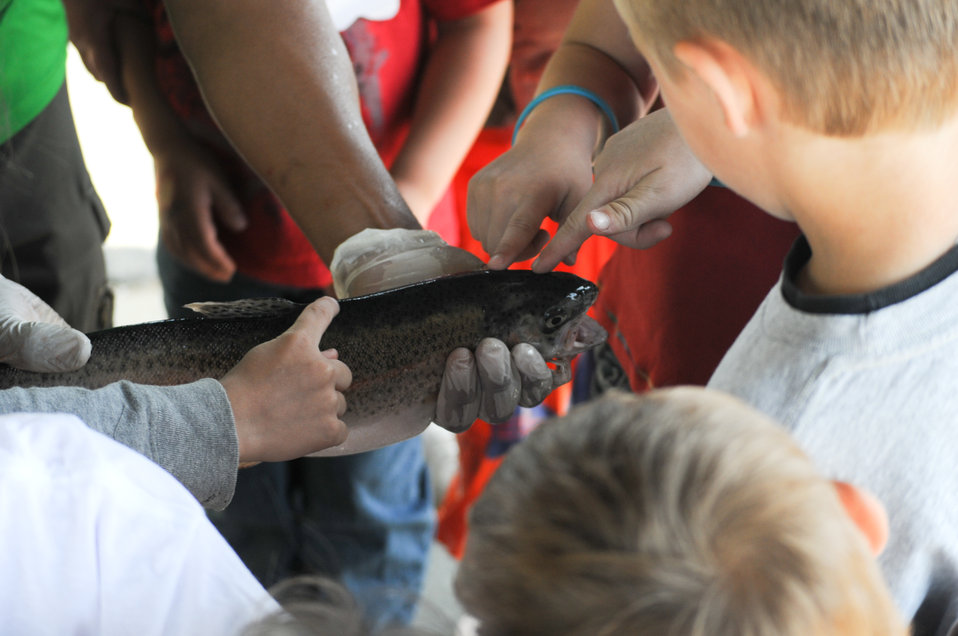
Kids Fishing Day at Hensley Lake

HENSLEY LAKE, Calif. (April 30, 2011) – Young Hensley Lake park visitors inspect a just-cleaned catch during the 15th annual Kids Fishing Day here April 30. The Sacramento District’s Hensley and Eastman lakes take turns hosting the event, which provides free loaner gear and clinics on fishing techniques and water safety to help connect kids with the outdoors.